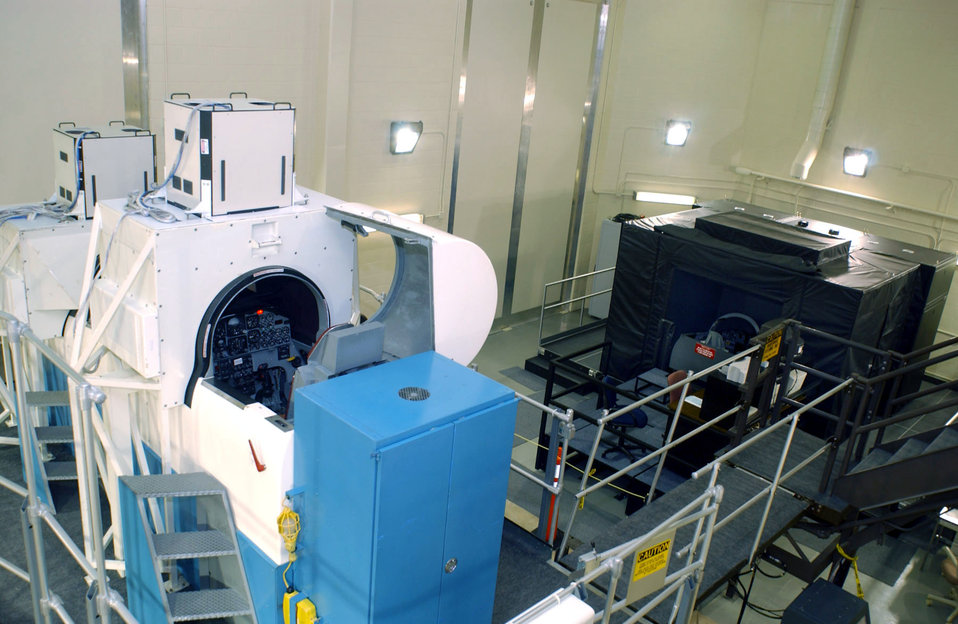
Simulator shuts down

RANDOLPH AIR FORCE BASE, Texas -- The two-story tall T-38A Talon analog simulator (left) towers over the new T-38C virtual reality trainer in the 12th Flying Training Wing's simulator building here.